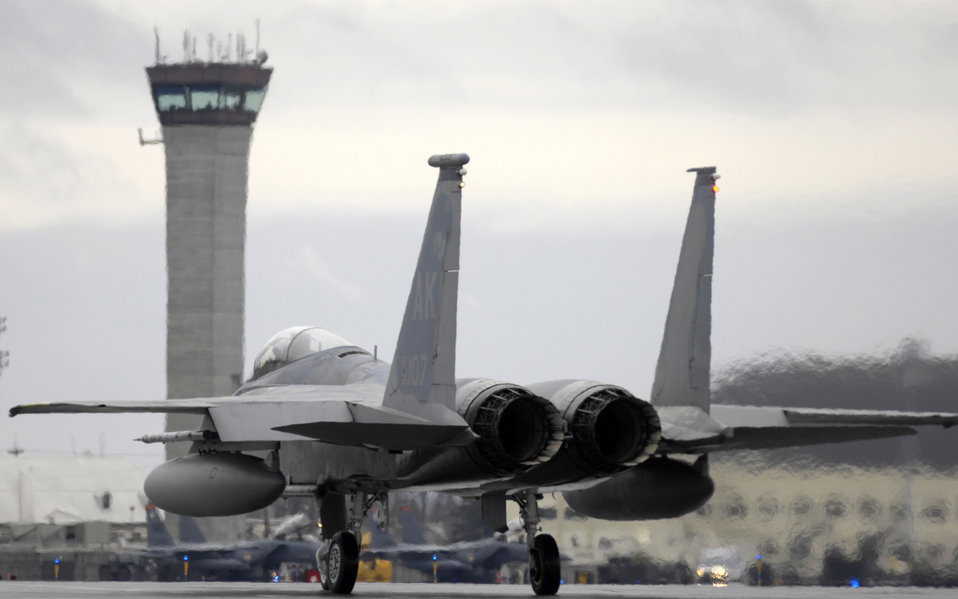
Interagency exercise kicks off

An F-15C Eagle taxis down the flightline May 7 at Elmendorf Air Force Base, Alaska, during a simulated alert launch as part of Alaska Shield/Northern Edge 2007. The exercise is part of the national level Ardent Sentry/Northern Edge 2007 -- a joint chiefs of staff-directed, U.S. Northern Command-sponsored homeland defense and Defense Support of Civil Authorities exercise.